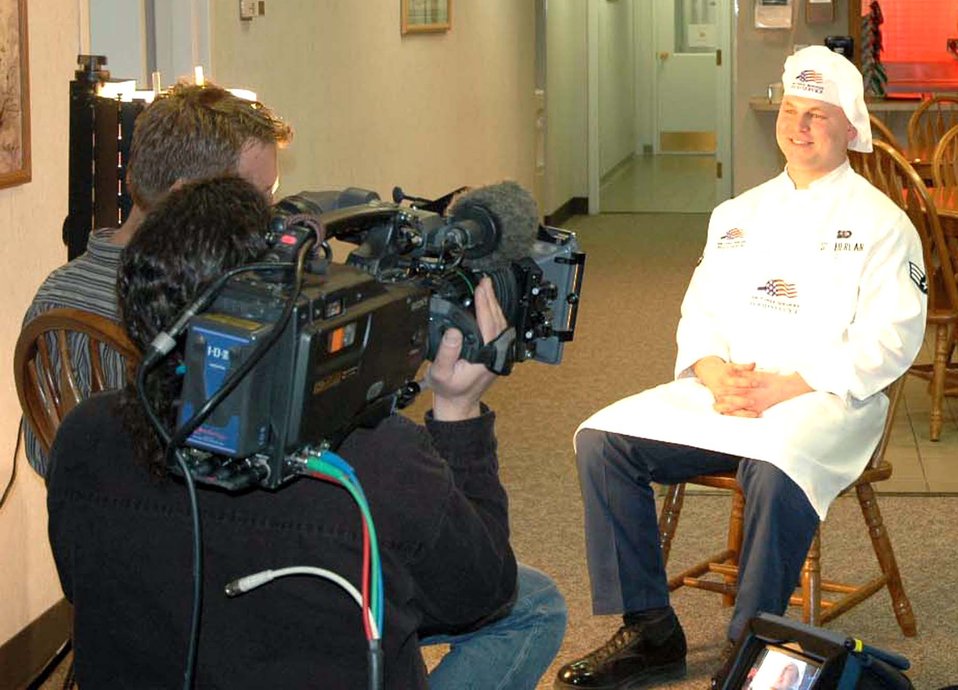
Missile Chef competes on TV

Senior Airman David Sutherland interviews with producer Dean Pedersen and cameraman Gary Feblowitz at I-01 missile alert facility Wednesday, March 15, 2006, as part of a profile for the Food Network Challenge series. The Airman competed against four others in the network's cookie challenge March 20 in Denver. Airman Sutherland is a missile chef with the 741st Missile Squadron, Minot Air Force Base, N.D.